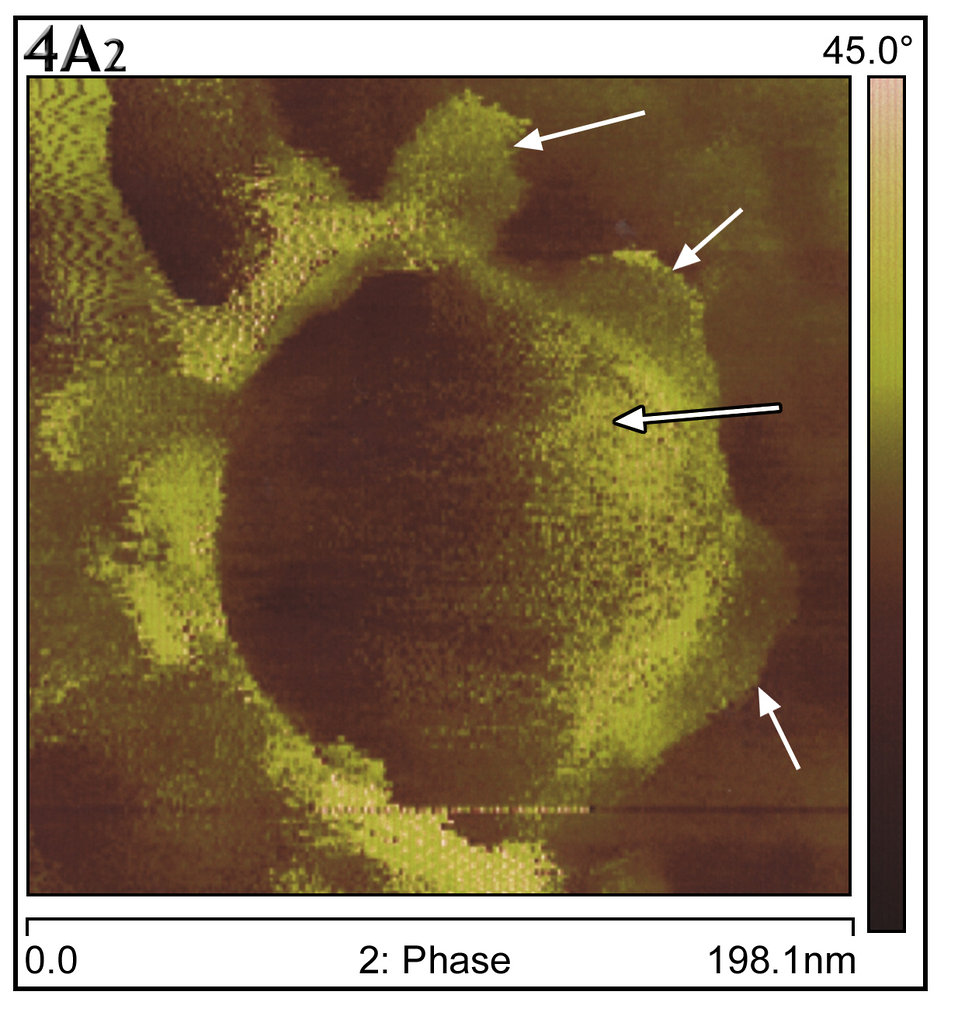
Atomic force microscopy captured the act of virus particle extrusion from a Vero E6 culture cell's surface 15hrs post-infection.